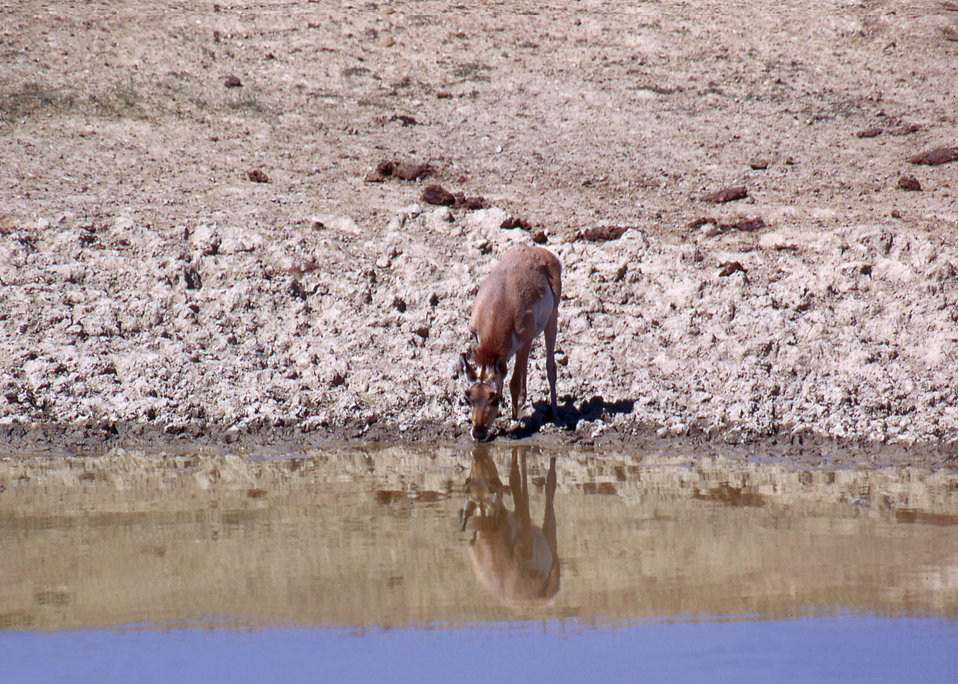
Antelope on a Wildlife Range in Arizona.